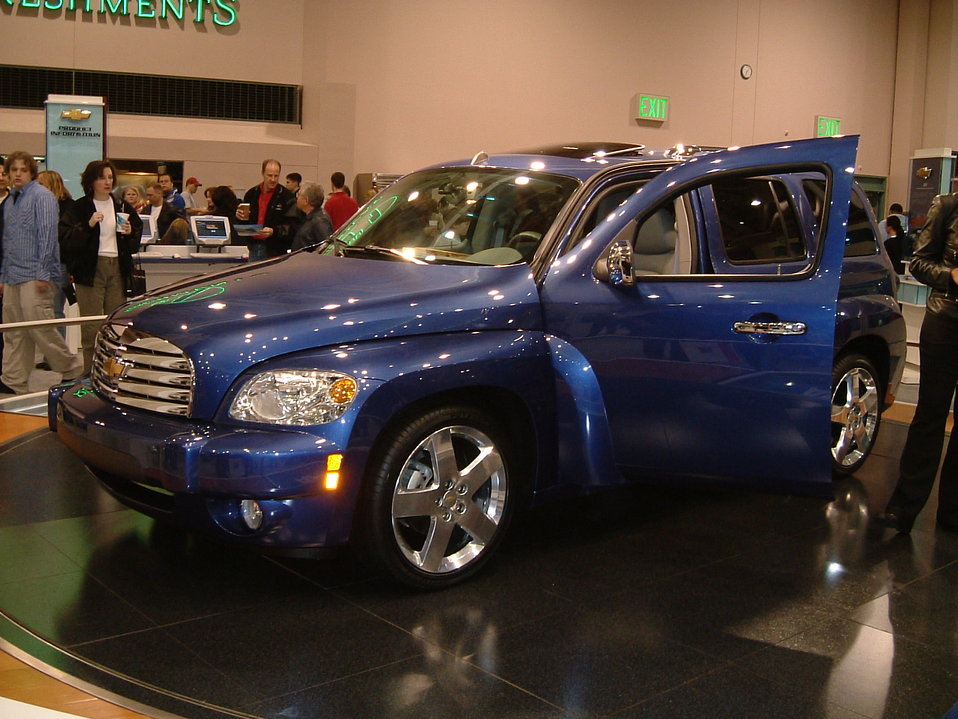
Chevrolet HHR, 2005